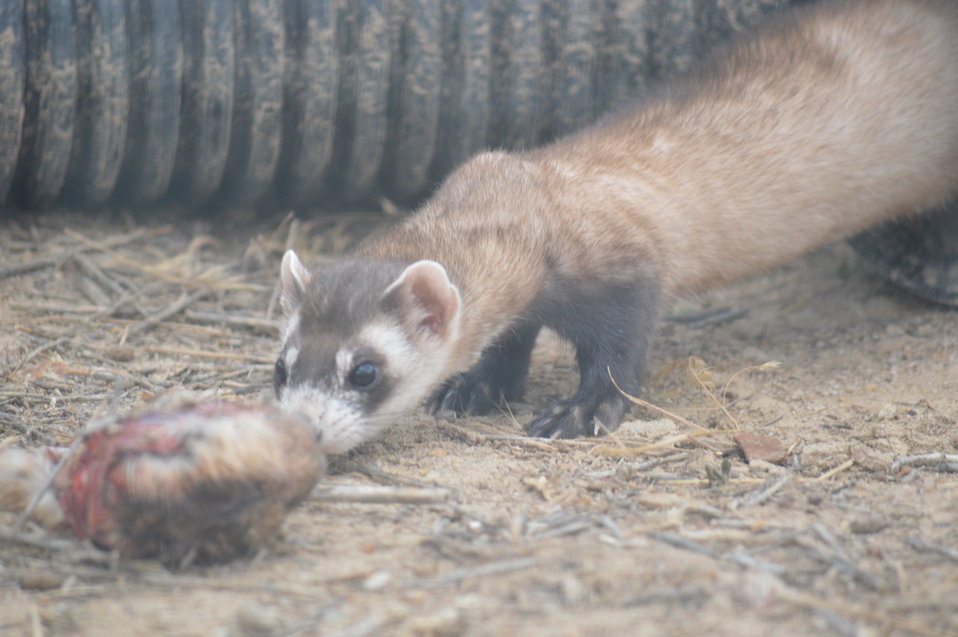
Interns visit the NBFFCC

In the summer of 2012, USFWS Region 6 interns visited the National Black-footed Ferret Conservation Center (NBFFCC) in Colorado to learn how the program reintroduces the endangered Black-footed ferret back into its native habitat.